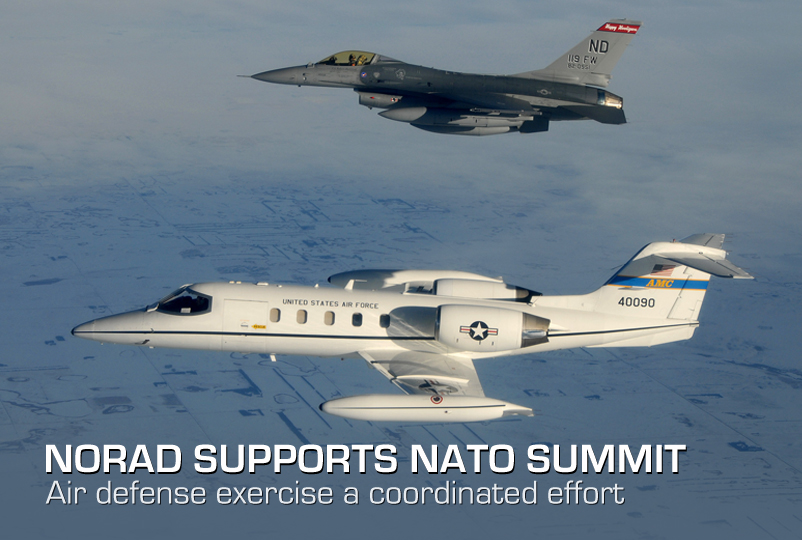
Fighters to fly air defense exercise to prepare for NATO summit